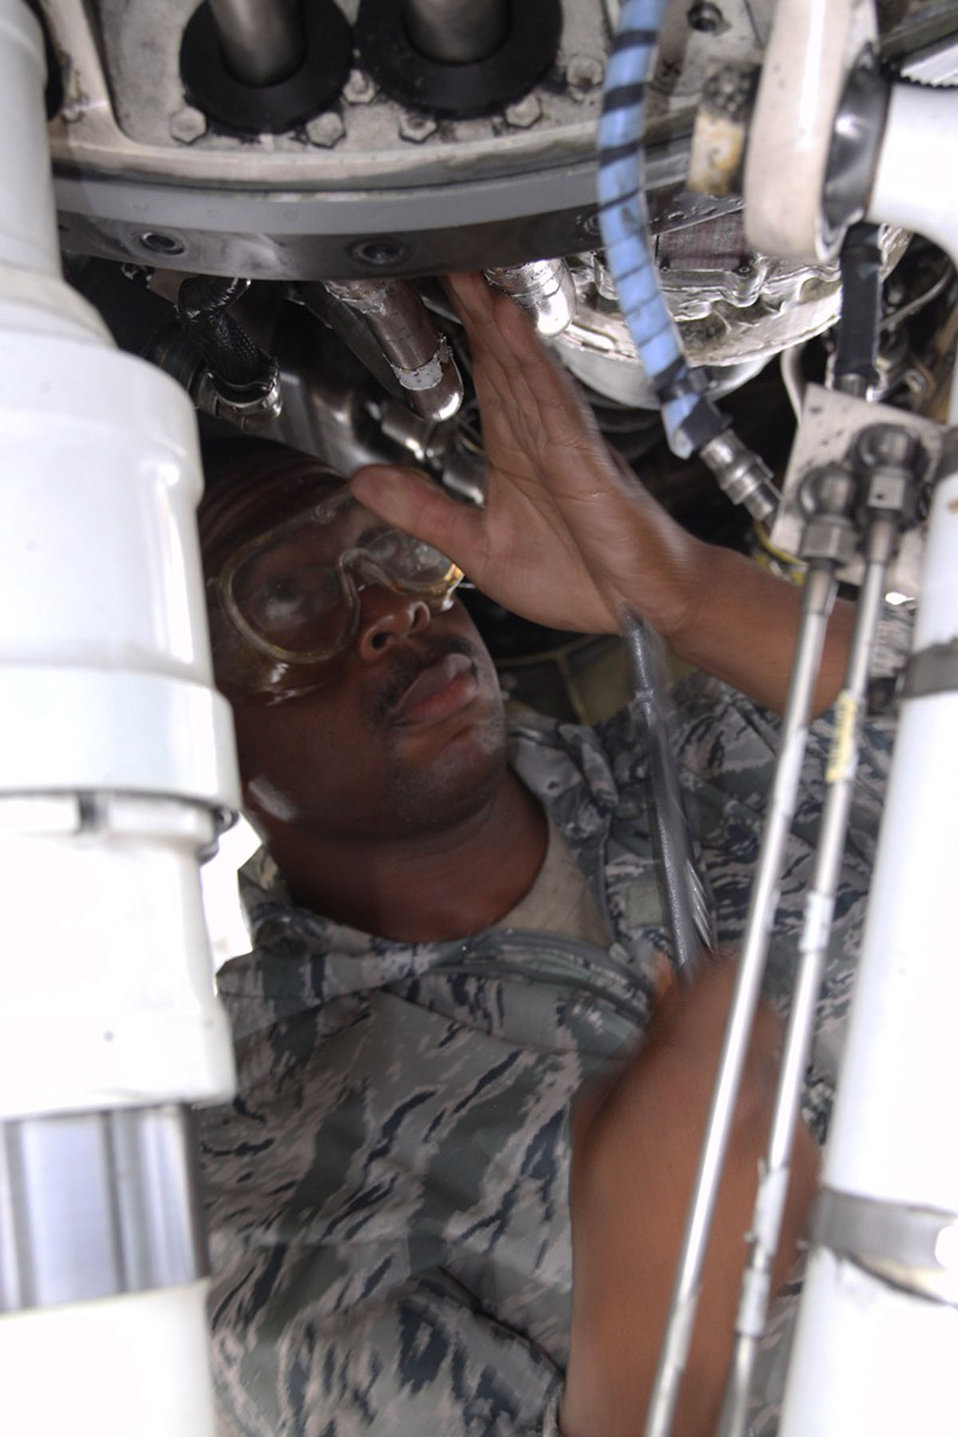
Airmen keep F-16s airborne during Balikatan 2009

Staff Sgt. Timmie Manning inspects an F-16 Fighting Falcon April 23 at the former Clark Air Base in the Philippines. U.S. and Philippine military forces are participating in Exercise Balikatan 2009, an annual joint bilateral exercise designed to improve combined planning, combat readiness and interoperability for a wide range of operations. Sergeant Manning is a crew chief assigned to the 63rd Aircraft Maintenance Squadron from Luke Air Force Base, Ariz.